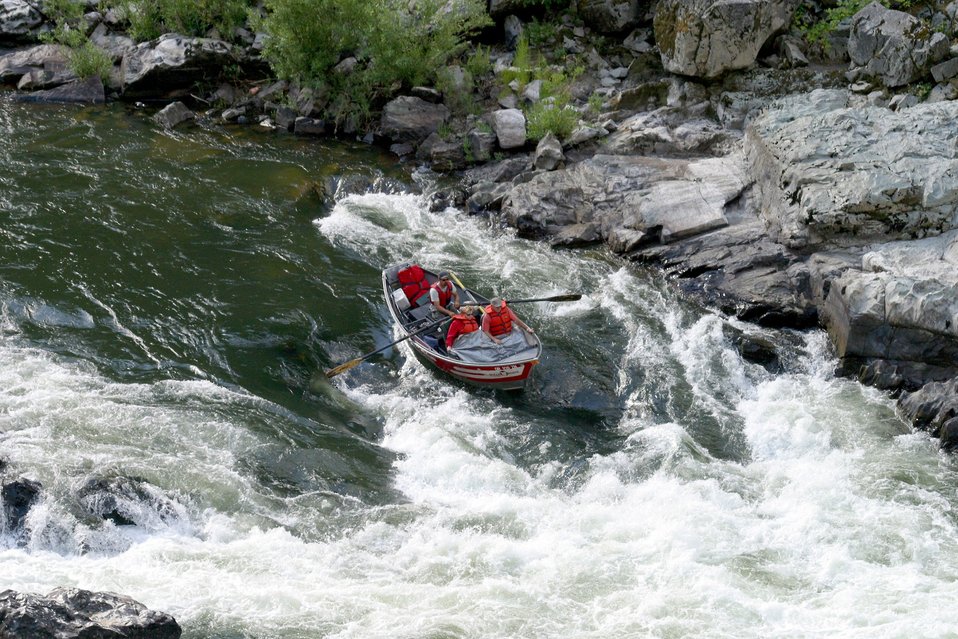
Grave Creek Falls